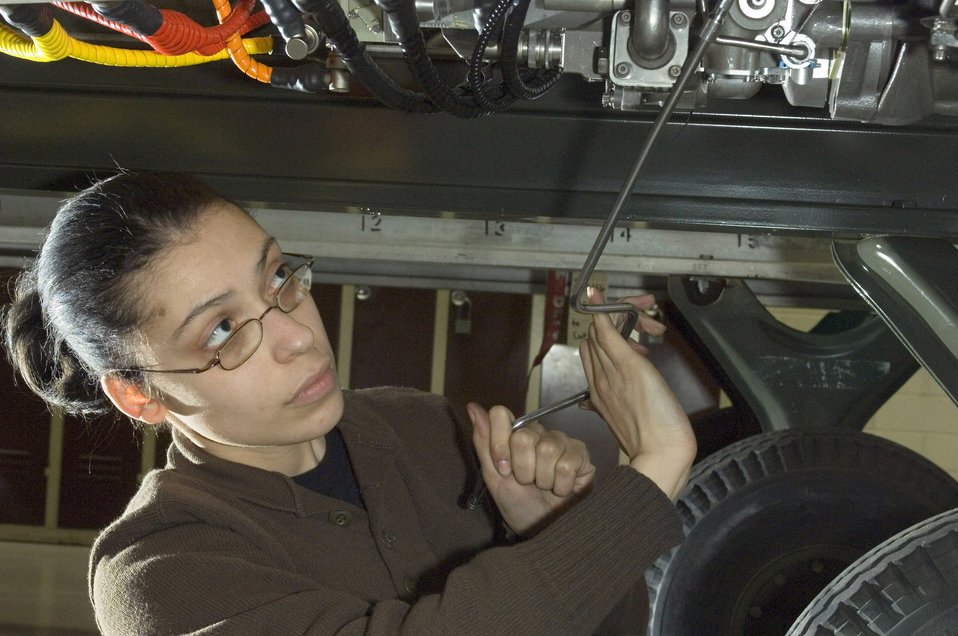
Spangdahlem mechanics fix jet engines 'on the line'

Airman First Class Jacquelynn Mathews changes the bolts on an F-16 Fighting Falcon jet engine at Spangdahlem Air Base, Germany, on Friday, March 24, 2006. Airman Mathews of Lawton, Okla., is a jet engine mechanic with the 52nd Component Maintenance Squadron's propulsion flight.